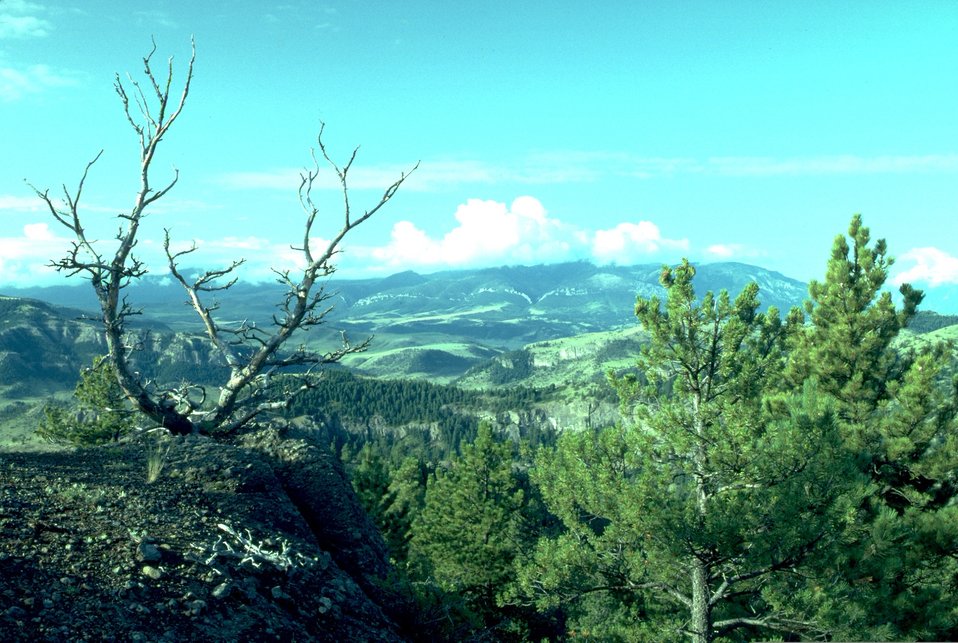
Mountain top view